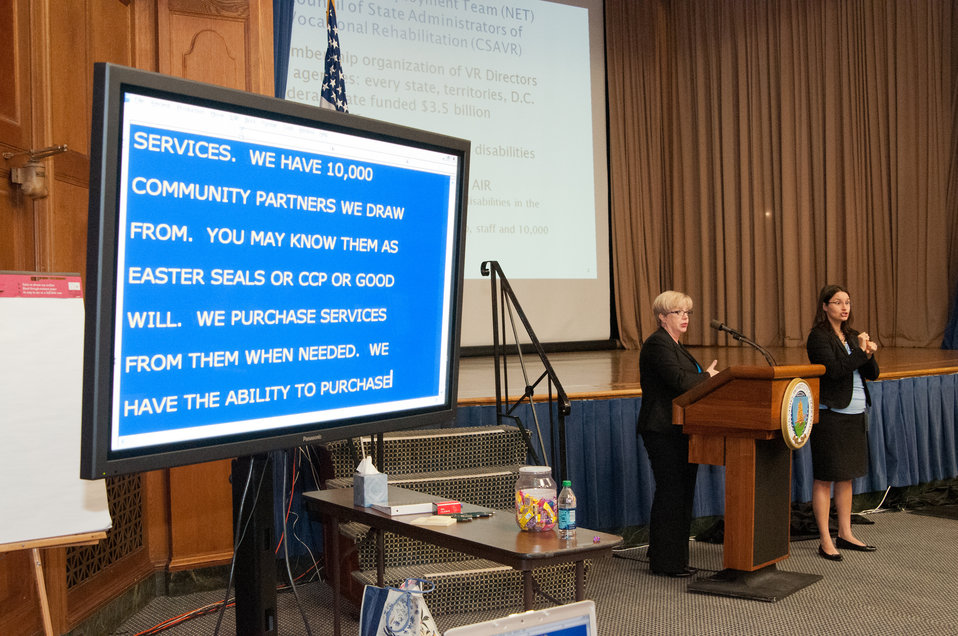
Council of State Administrator’s of Vocational Rehabilitation (CSAVR) Business Director Kathy West Evans discusses the CSAVR Memorandum of Understanding (MOU) and how it can help disability employment managers in the Federal government at the U.S. Department of Agriculture (USDA) Office of Human Resources Management (OHRM) Disability Employment Program Team Training at USDA in Washington, D.C. Tuesday, May 14, 2013. Susie Needham interprets for hearing-impaired employees during the event. The monitor in the background shows the Communication Access Real Time (CART) System used to communicate to hearing-impaired employees.